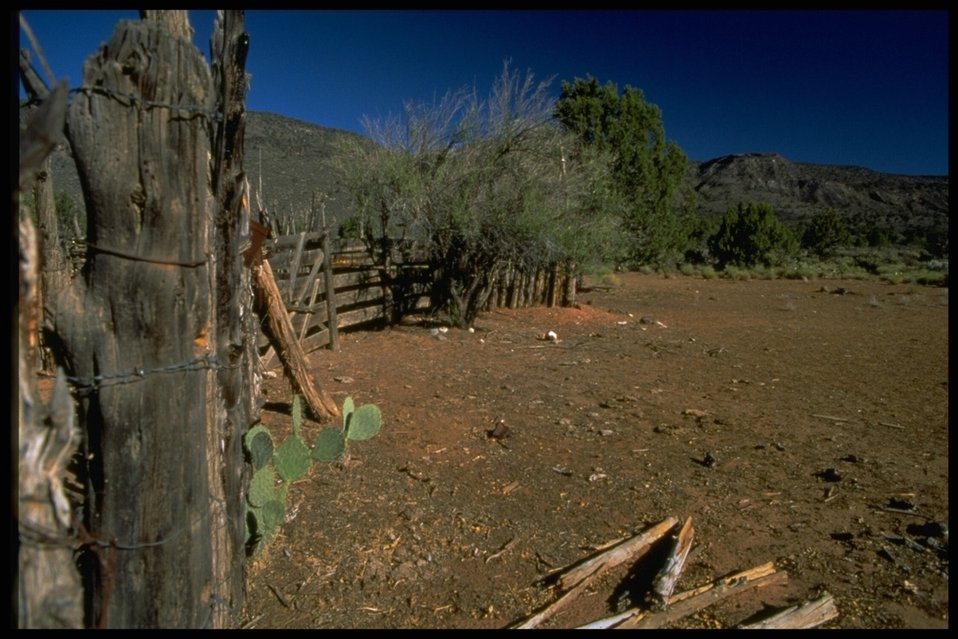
A old fence with cacti and Palo Verde trees growing next to it.